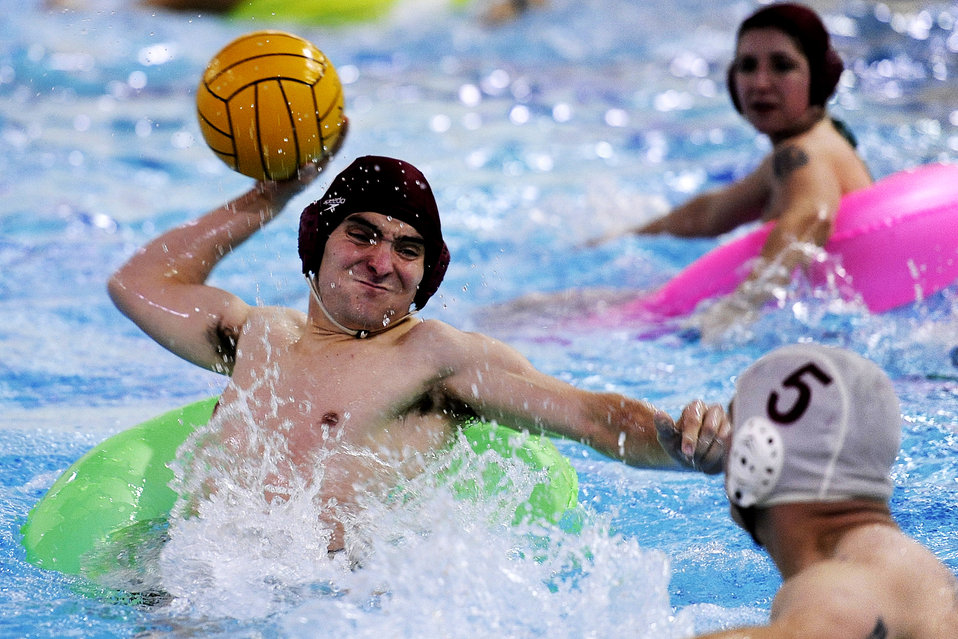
In your face!

Neil Fulsang launches a shot on goal against the C Company, 307th Expeditionary Signal Battalion defense in the third-place game of the Joint Base Elmendorf-Richardson inner tube water polo tournament Nov. 23, 2011, in Alaska. Fulsang is a member of the Alaska National Guard.